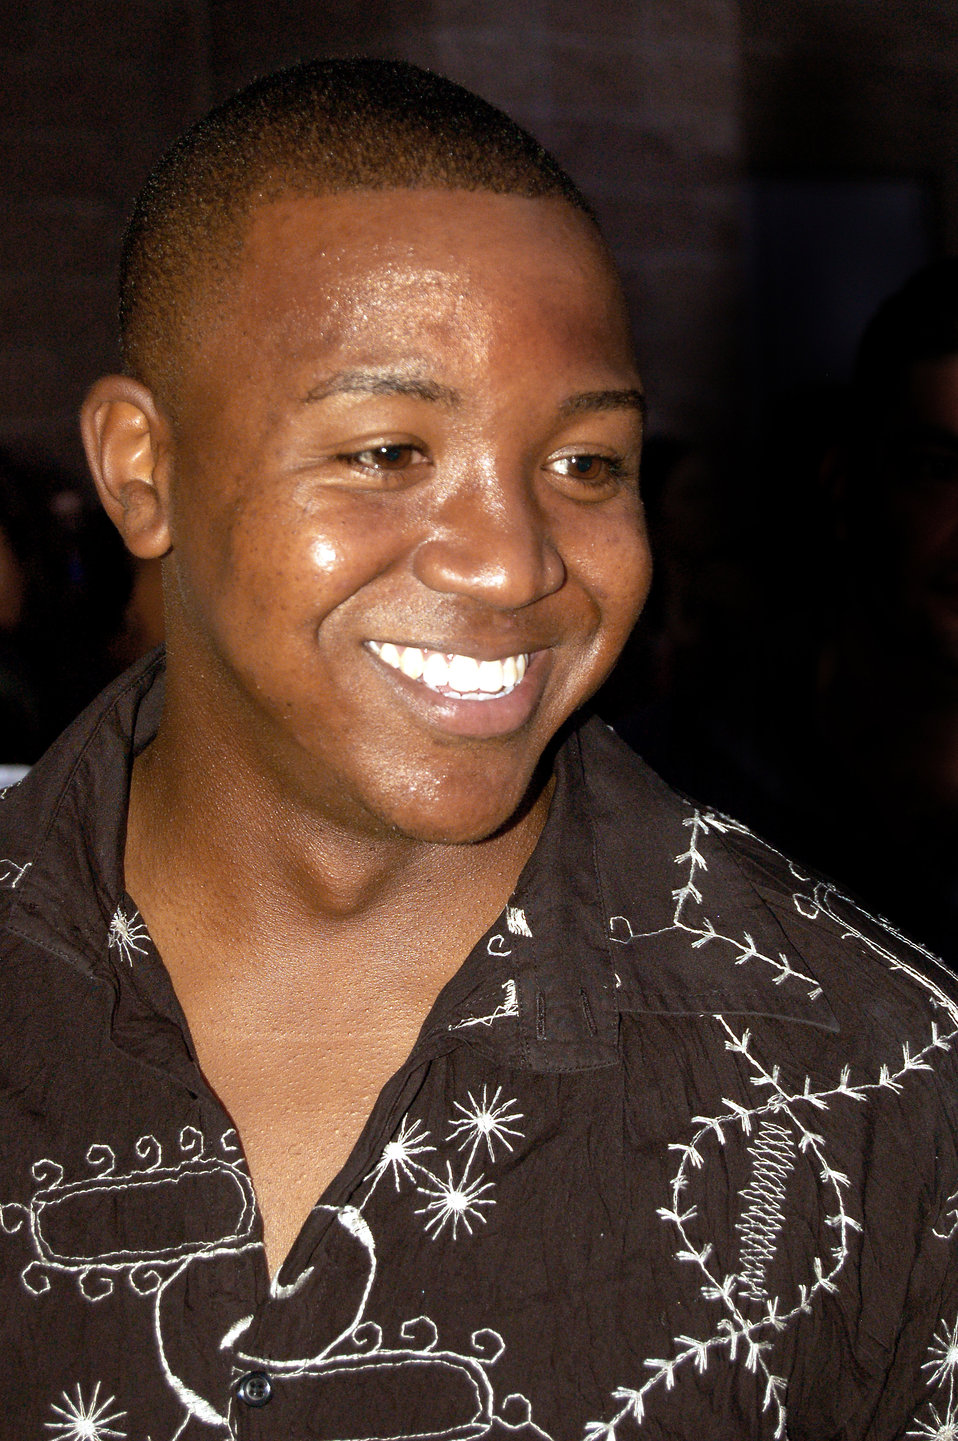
Two Alamo City Airmen vie for 'American Idol' spot

Staff Sgt. Keith Loudermill waits outside the Alamodome moments before his tryout for the FOX television show